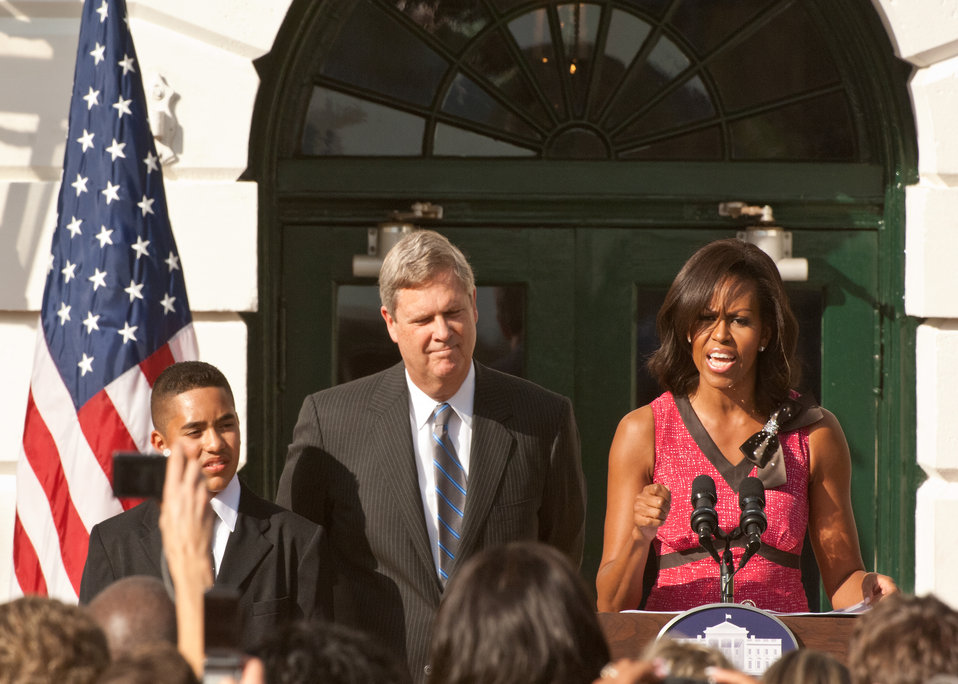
From left: Alex Roman, Walsh Elementary School, Chicago, Illinois, Agriculture Secretary Tom Vilsack and First Lady Michelle Obama. Agriculture Secretary Tom Vilsack and First Lady Michelle Obama hosted a reception on the South Lawn of the White House in Washington, DC, Monday, October 17, 2011 to honor the over 1200 winners in the HealthierUS Schools Challenge that met the First Lady’s goal to double the number of participants in the HealthierUS School Challenge in a year. In February 2010, First Lady Michelle Obama introduced “Let’s Move” incorporating the HealthierUS School Challenge into her campaign to promote a healthier generation of children. The HealthierUS School Challenge recognizes elementary, middle and high schools nationwide that create healthier school environments by providing exceptional nutrition education, nutritious food and beverage choices, physical education and opportunities for physical activity. Since the beginning of the HealthierUS School Challenge in 2004, awards have been given to schools in 44 states. As of September 28, 2011, there are 1631 schools certified. A tool kit on how to become a Healthier U.S. School can be found at www.fns.gov.